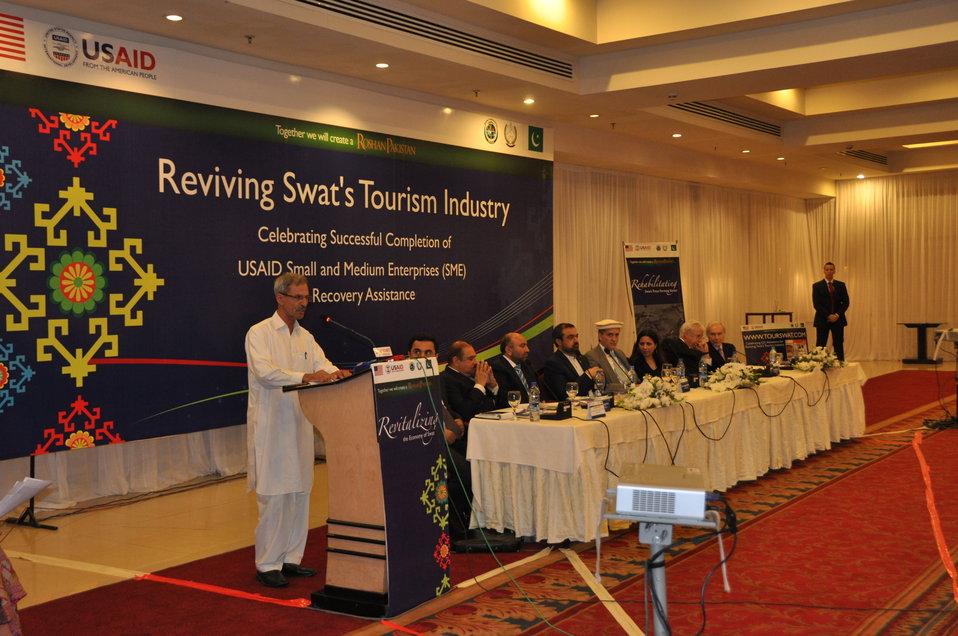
Graduation event of USAID Firms Project's Malakand Small and Medium Enterprises (SME) Recovery Assistance Program

Business owner, Mr. Rasheed Khan, President, Trout Fish Farm Association, Swat gave an inspirational account of their journey with USAID Firms Project from disaster to development.